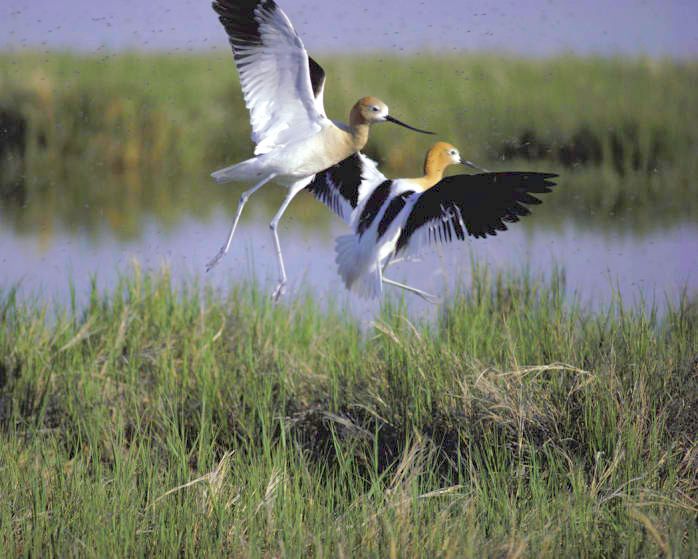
Avocets

Bear River Migratory Bird Refuge, UT. USFWS